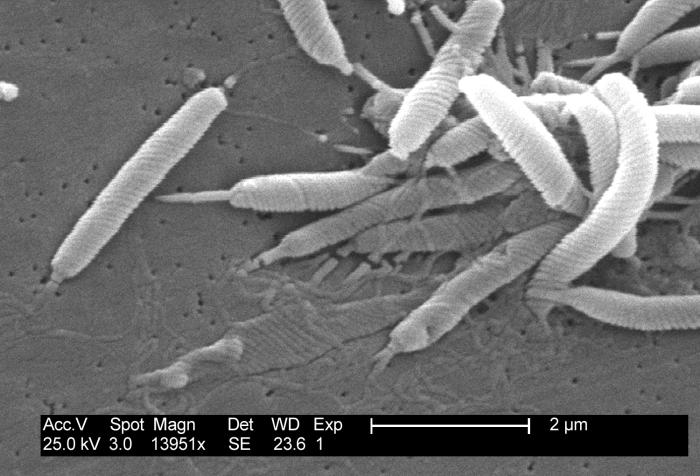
This scanning electron micrograph depicts a grouping of Gram-negative Flexispira rappini bacteria, magnified 13,951x.